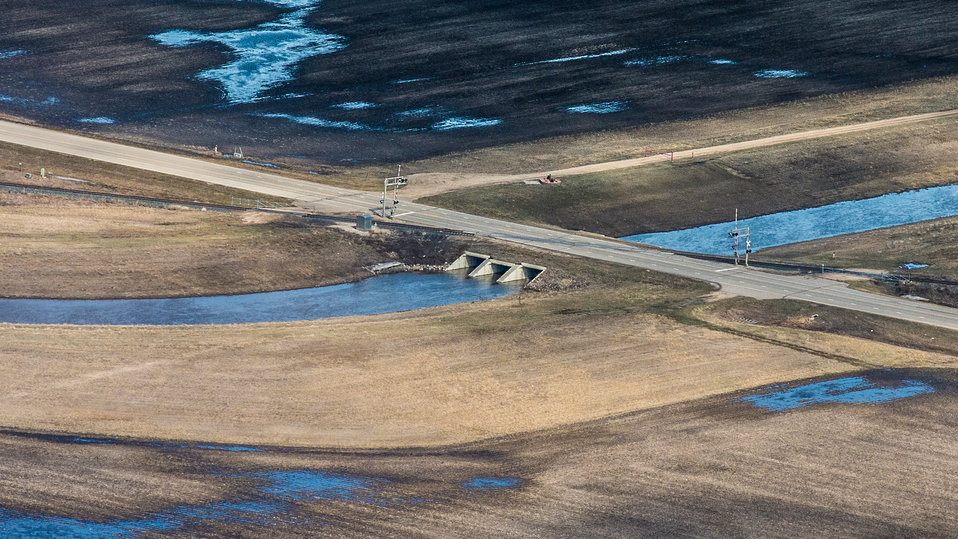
Snake River Diversion, a Public Law PL83-566 Small Watershed Program, at Warren, MN, on Wednesday, May 1, 2013. For information about this and other programs from the USDA Red River Basin Initiative (RRBI) please see www.mn.nrcs.usda.gov/news/features13/RRBI.html.